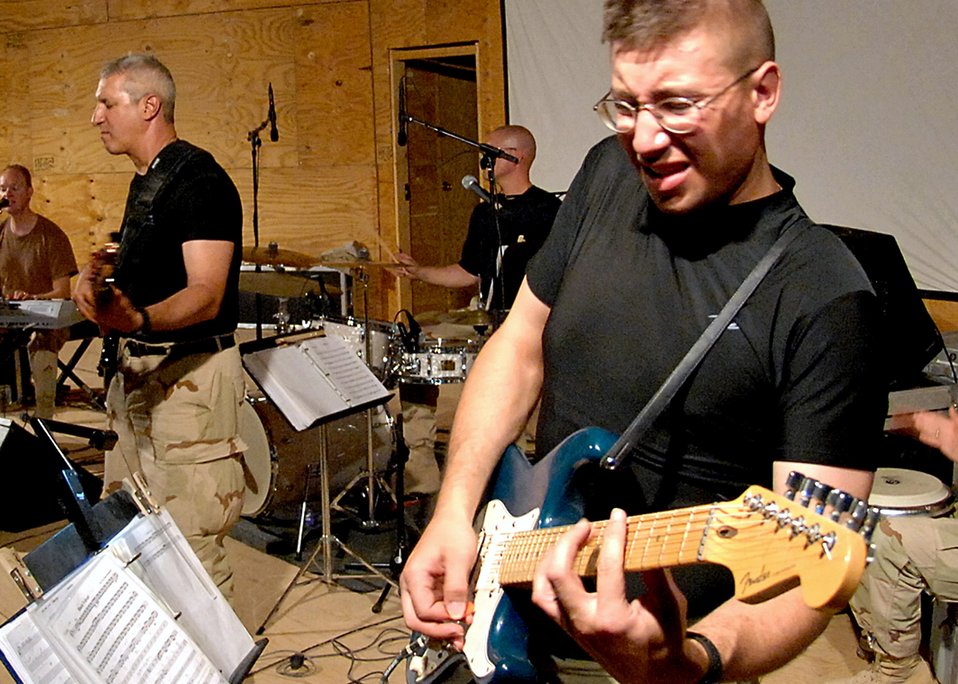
On tour in the AOR

Senior Airman Andrew Minns, lead guitarist for the U.S. Central Command Air Forces Band